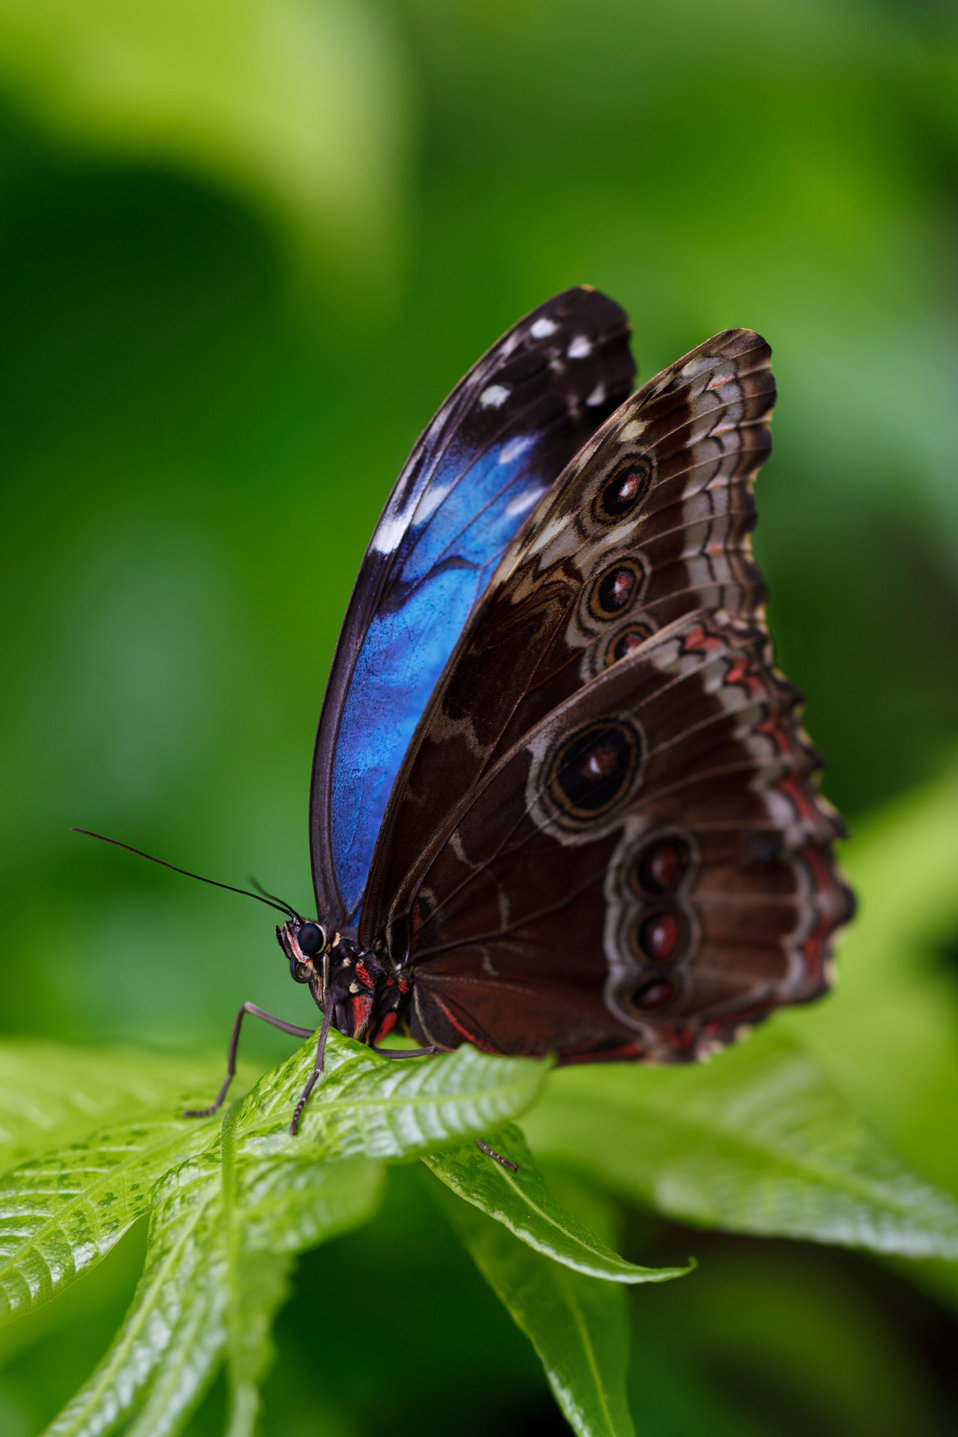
Morpho butterfly

Blue morpho butterfly - morpho peleides sitting on a green leaf.